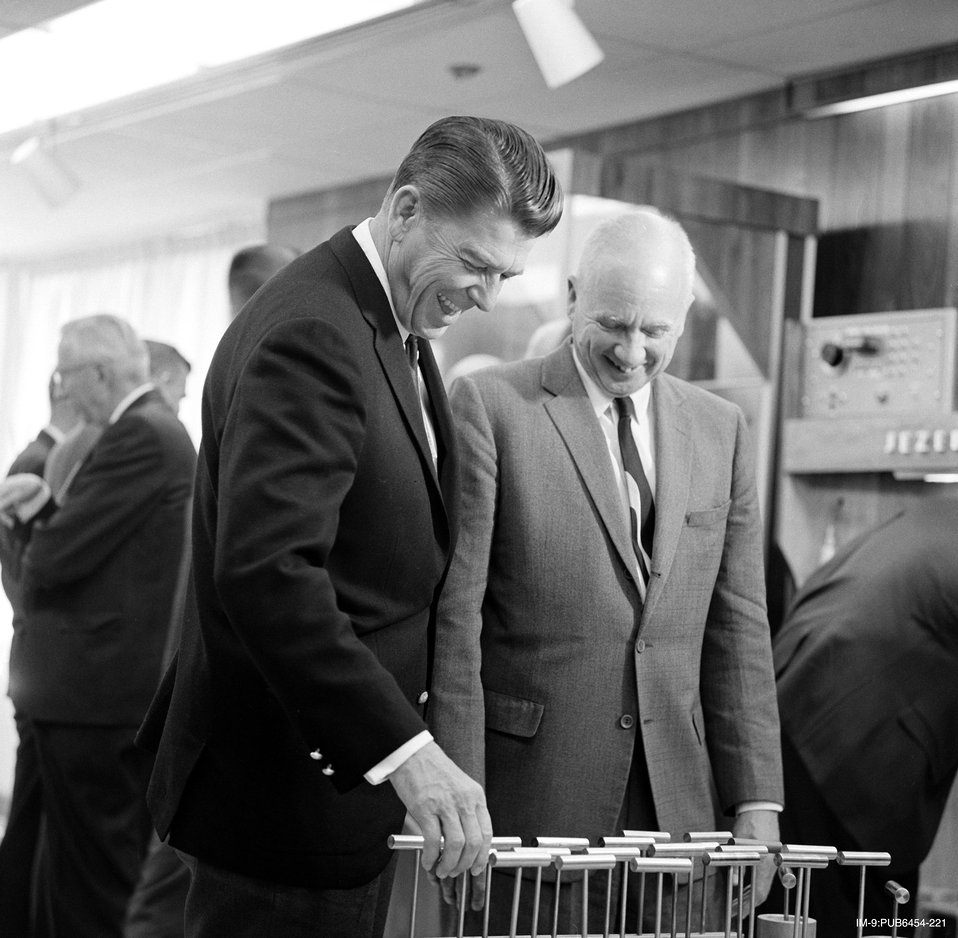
GOVERNOR OF CALIFORNIA, RONALD REAGAN VISITS WITH DIRECTOR NORRIS BRADBURY AT LOS ALAMOS IN 1967.